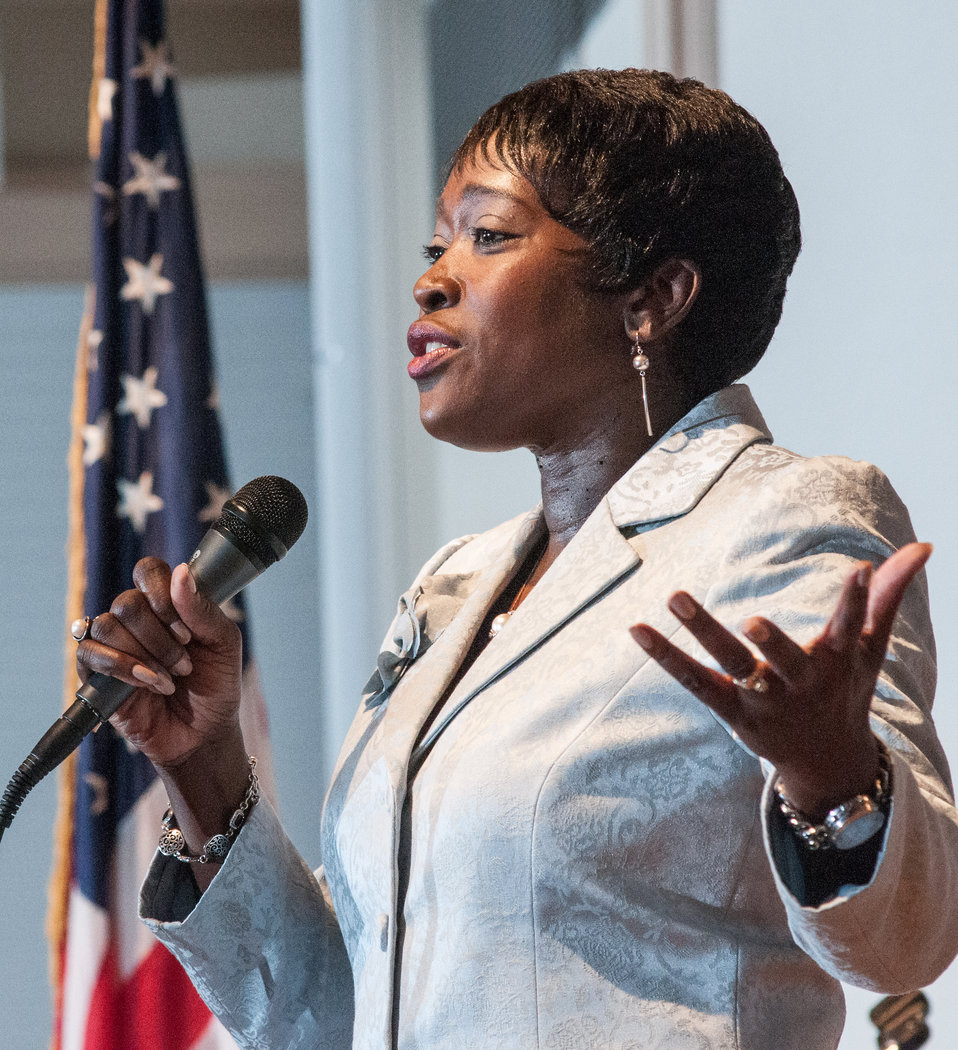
U.S. Department of Agriculture (USDA) Departmental Management Office of Advocacy and Outreach Director Carolyn Parker provided opening remarks to approximately 300 youth members, Extension Educators and 4-H Adult Volunteers from across the nation, as well as U.S. Territories at the 2013 National 4-H Conference, on Monday, April 8, 2013 in Chevy Chase, MD. National Institute of Food and Agriculture Director Dr. Sonny Ramaswamy provide additional remarks and Secretary Tom Vilsack will deliver the keynote address. The youth delegates are in grades 10-12 (15-19 years old). The purpose of the conference is to 1) engage 4-H youth in personal development experiences that will increase knowledge, resources, and skills; 2) discuss topics affecting youth and 4-H programming nationwide; and 3) empower and mobilize 4-H youth to create positive social change in their communities in a meaningful and genuine way. The conference also reinforces the rich history of 4-H and its valuable tie to USDA, Cooperative Extension and the Land-Grant University System.